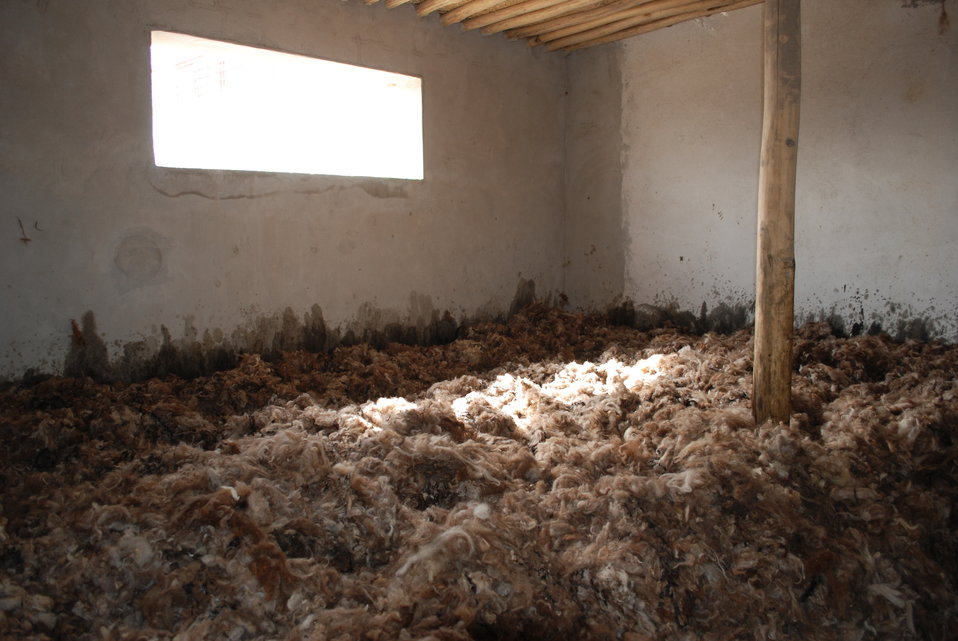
'On the Road' in Balkh Province